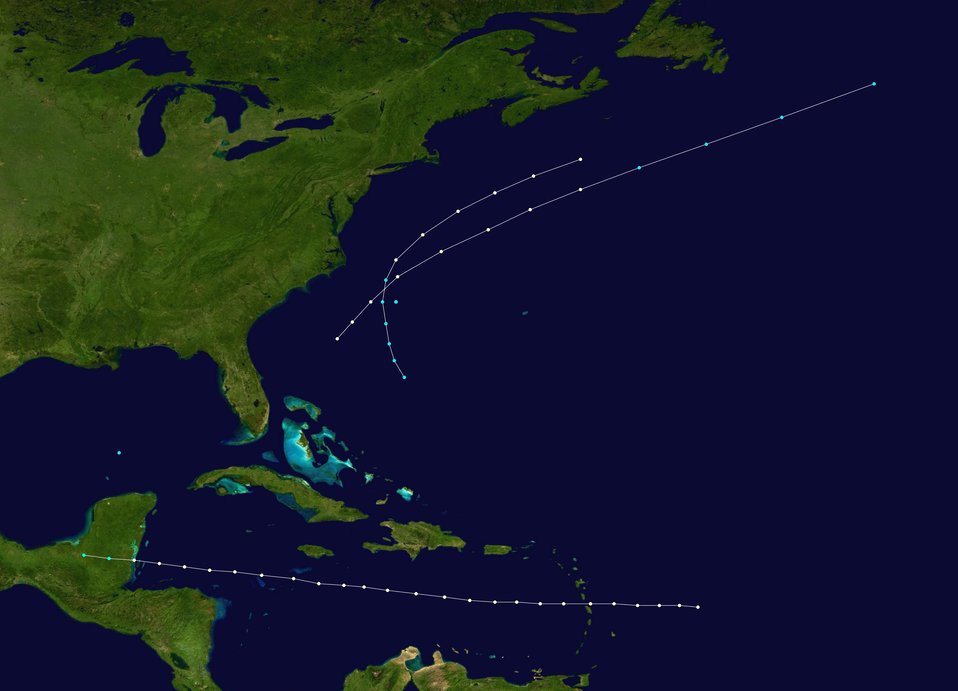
1864 Atlantic hurricane season summary